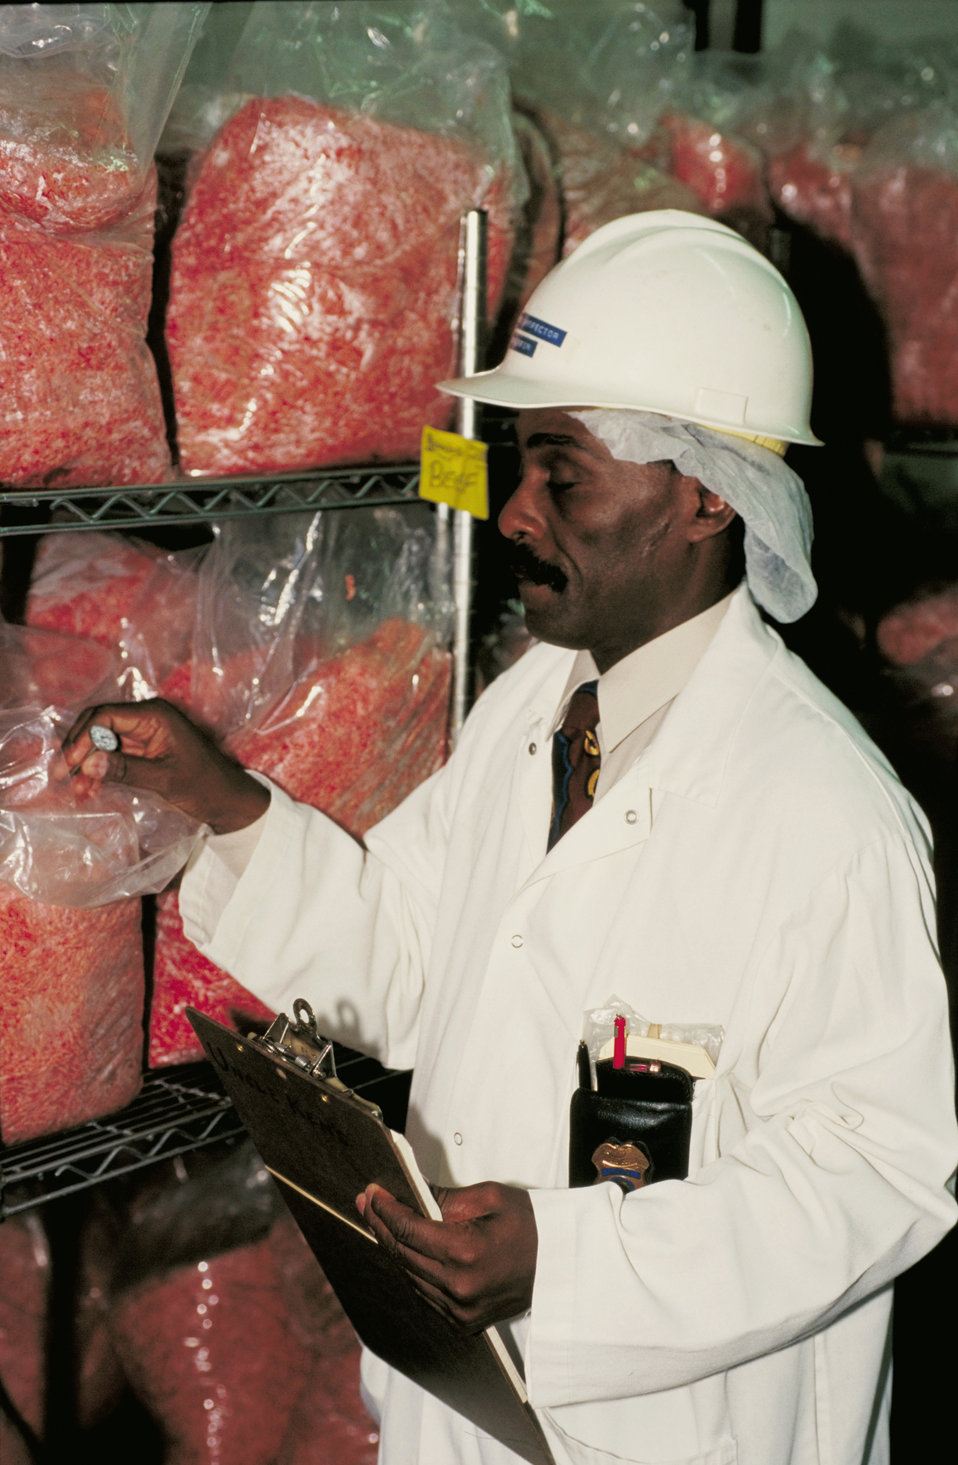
U.S. Department of Agriculture (USDA) Food Safety Inspection Service (FSIS) inspector checks the temperature of ground beef at various control points to compare them with those measured and recorded by the plant to prevent multiplication of pathogenic bacteria in compliance with Hazard Analysis and Critical Control Points (HACCP) issued by FSIS on June 15, 1995.